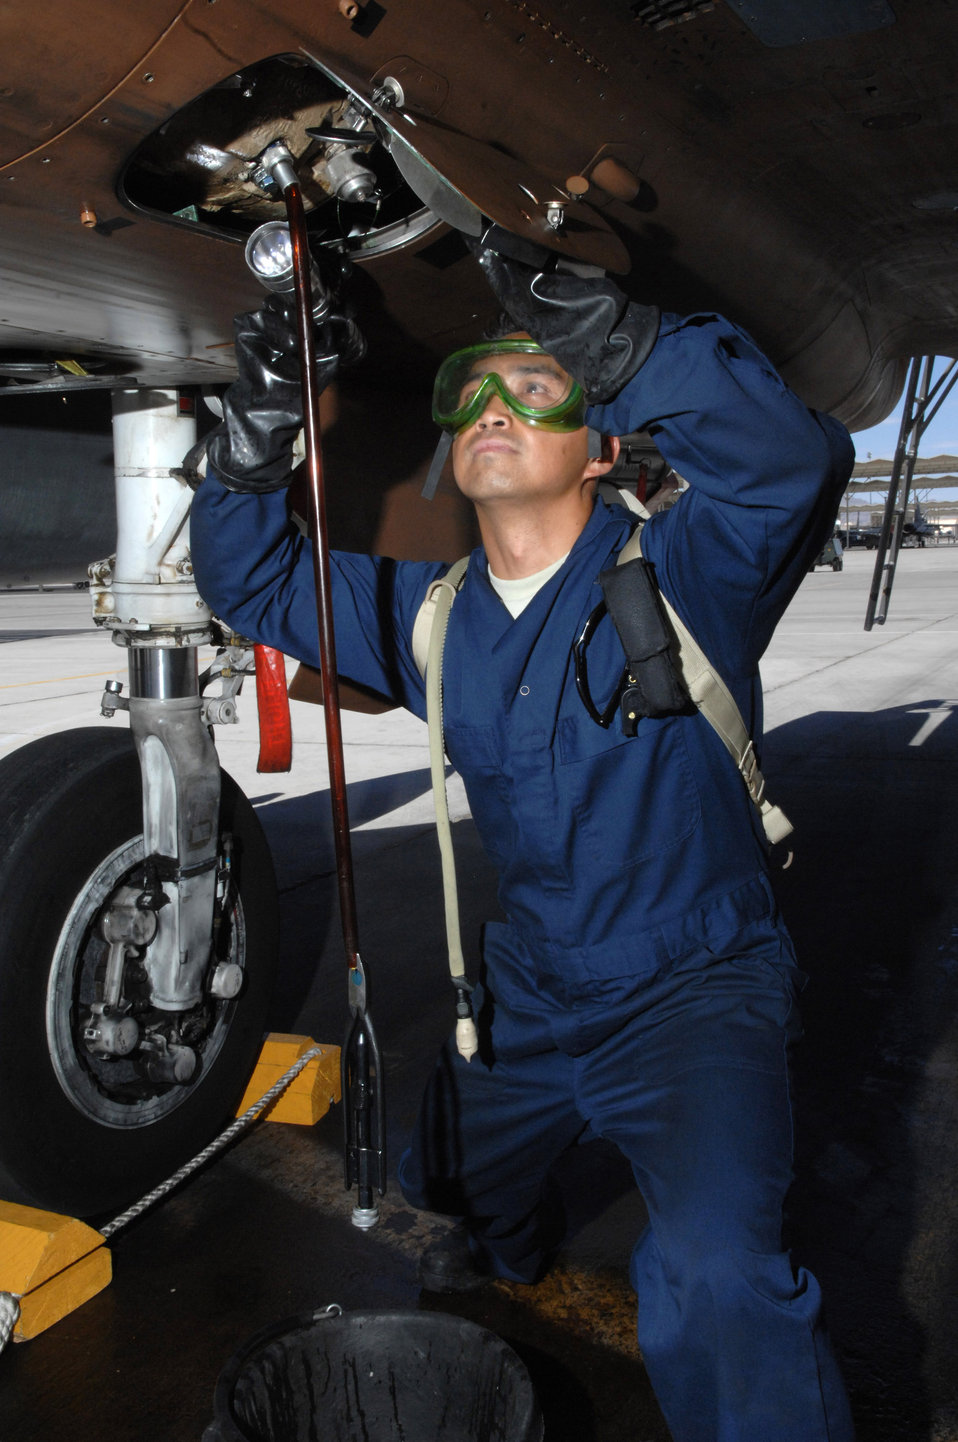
Teamwork

Staff Sgt. Raymond Oliveros services a generator on a F-15 Eagle July 24 at Nellis Air Force Base, Nev. The 926th Group is an Air Force Reserve unit under the 10th Air Force, Naval Air Station Joint Reserve Base, Fort Worth, Texas. The group is located at Nellis AFB as an associate unit to the Air Force Warfare Center. Through total force integration, reservists are integrated into active duty Air Force units, accomplishing the mission alongside active-duty Airmen on a daily basis. Sergeant Oliveros is an F-15 crew chief assigned to the 926th Group Det. 2.